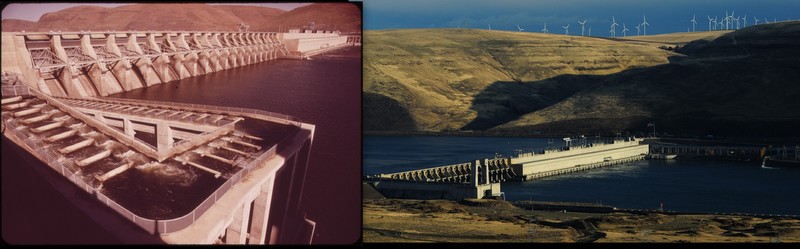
Then and Now, John Day Dam, Columbia River

'Then' Documerica Photo: May, 1973 The John Day Dam Viewed From the Washington Side of the Columbia River, Looking Towards the Oregon Shore by David Falconer.
'Now' State of the Environment Photo: John Day Dam across the Columbia River, with windmills near Goldendale, WA visible along the ridge line in the background by Scott Butner.